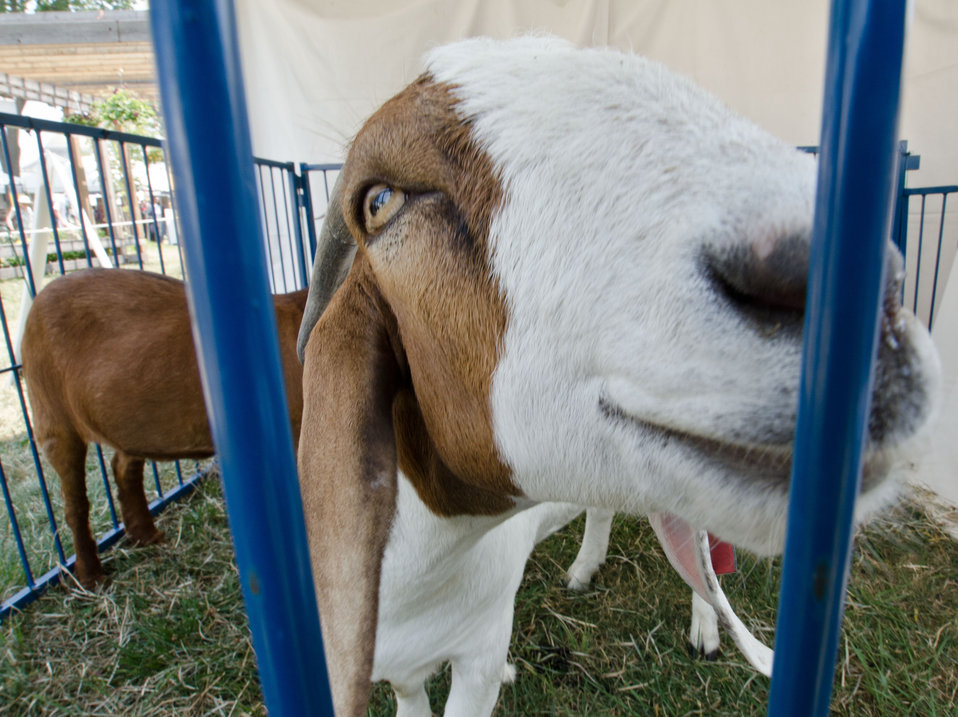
Breeding goats 'Peanut Butter' and 'Jelly' were on hand at the 2012 Smithsonian Folklife Festival, Thursday, June 28, 2012 on the National Mall in Washington, D.C. One of the three themes this year is “Campus and Community.” It celebrates the 150 years of the USDA and the Land-Grant University System. The U.S. Department of Agriculture (USDA) and the Land-Grant system extend education across the country, contributing to American agriculture success and rural prosperity. “Campus and Community” has demonstrations, discussions, hands-on activities, and entertainment to that showcase the many ways that this partnership works to improve American agriculture and rural life.